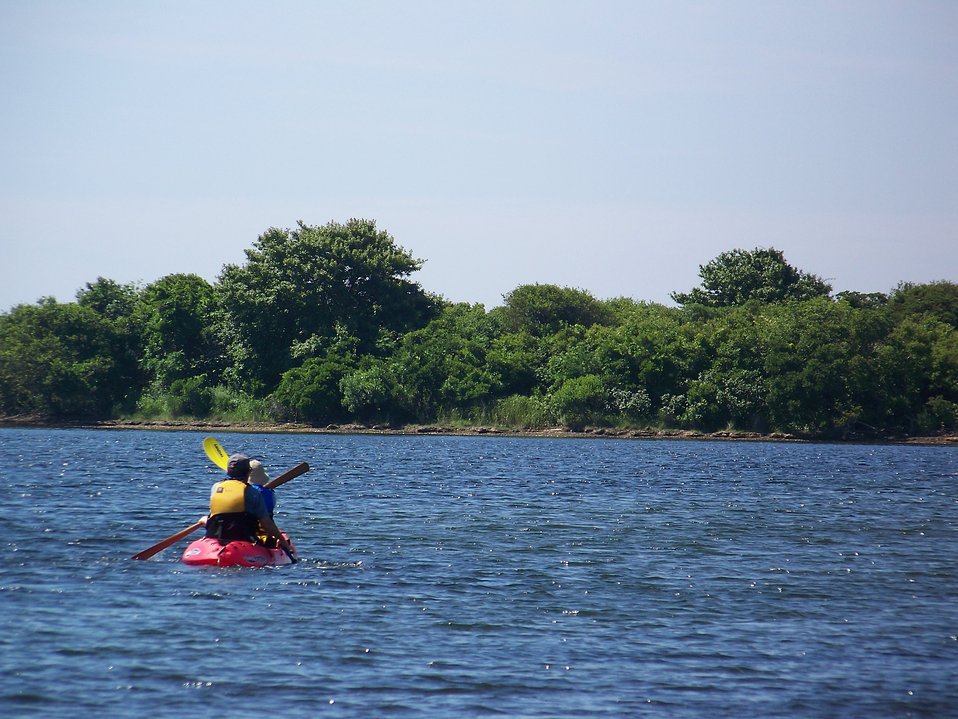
Kayakers

Ninigret National Wildlife Refuge, RI.